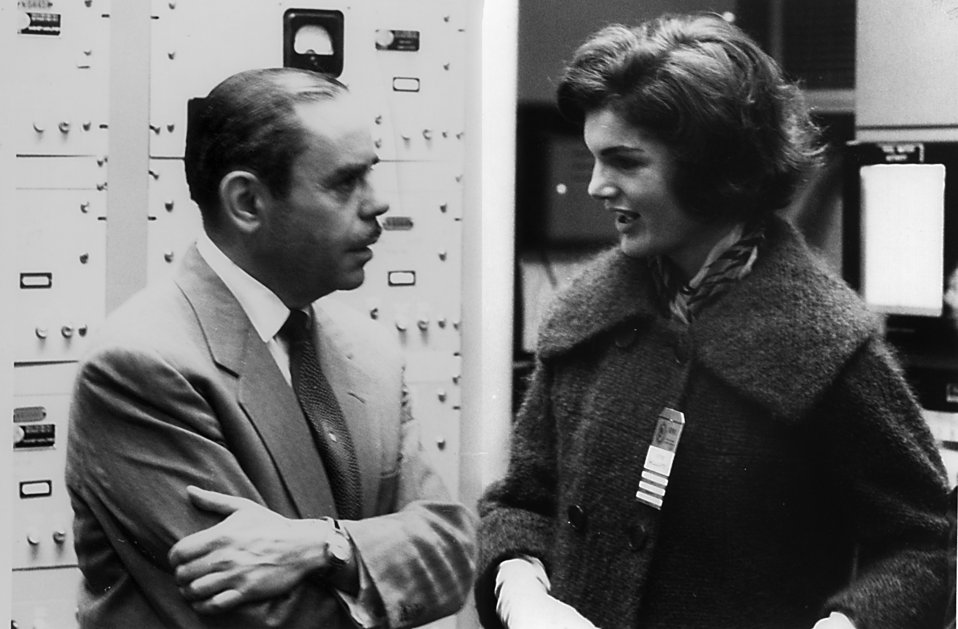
Sam Sapirie and Jackie Kennedy Oak Ridge National Lab.

59-0152-2b DOE photo Ed Westcott

Sam Sapirie and Jackie Kennedy Oak Ridge National Lab. Oak Ridge Tennessee 2-24-1959